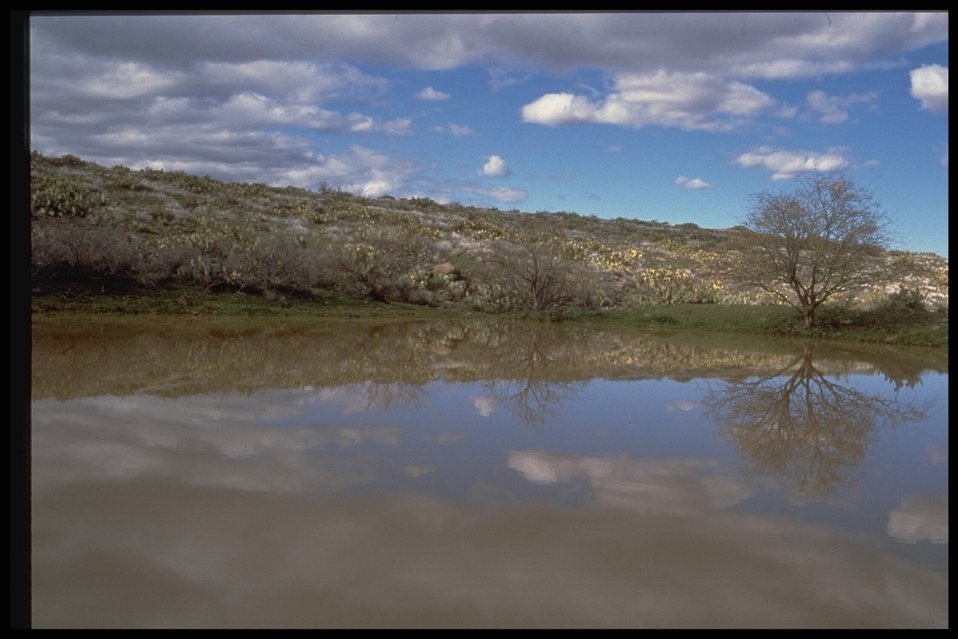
The Agua Fria River runs through the 71,000 acre Agua Fria National Monument.